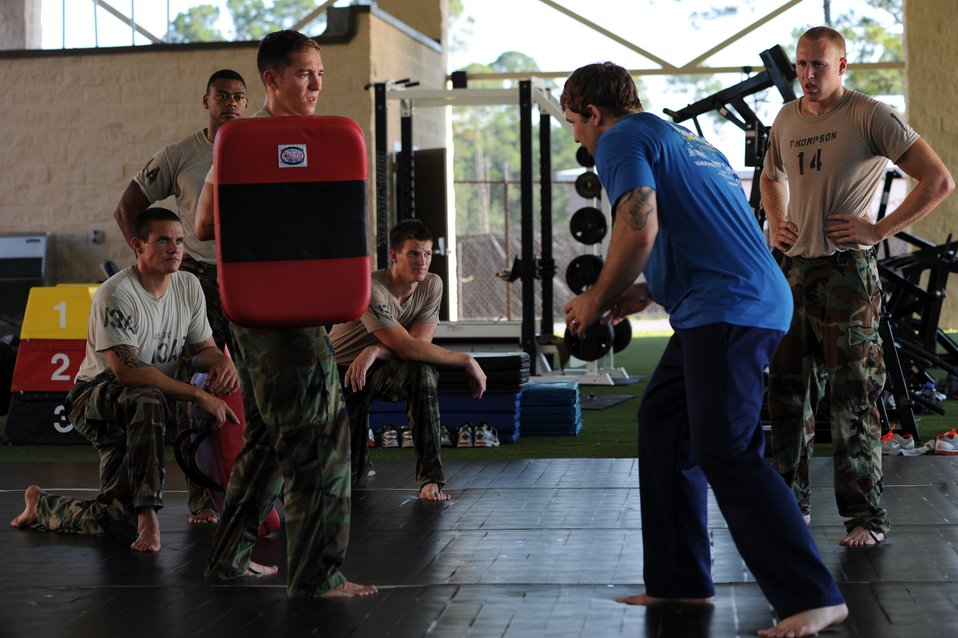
UFC fighter helps train battlefield Airmen

Airmen from the Special Tactics Training Squadron receive a combative class taught by Ultimate Fighting Championship Middleweight Alan Belcher June 8, 2010, at Hurlburt Field, Fla.